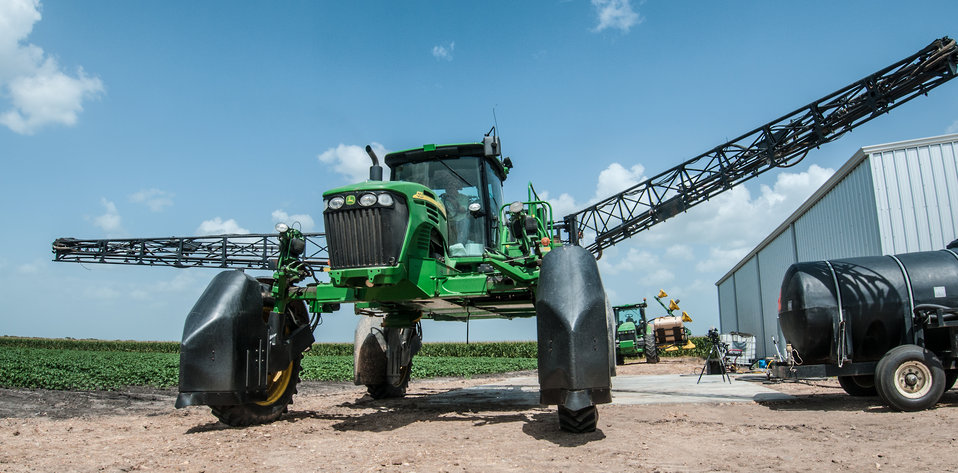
Josh Marek performs an operational check of a sprayer before heading to a local farm in Wharton County, TX on Jun. 20, 2013. Marek is a new small farm owner with 700 acres of corn and cotton that he started in 2007. Marek has been working on the farm since he was 15 and supports his wife Terry and 1-year old son.